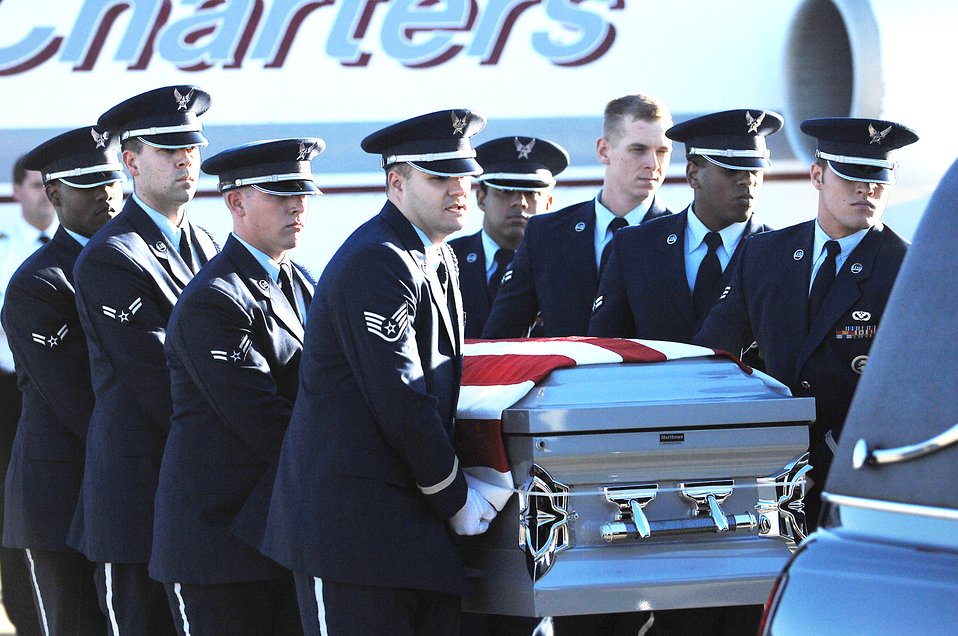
Team Seymour provides honors for fallen Airman

Base honor guard members perform the dignified transfer of Tech. Sgt. Adam Ginett Jan.25, 2010 AT Seymour Johnson Air Force Base, N.C. Sergeant Ginett, a fallen explosive ordnance disposal technician, wasassigned to the 31st Civil Engineer Squadron at Aviano Air Base, Italy.